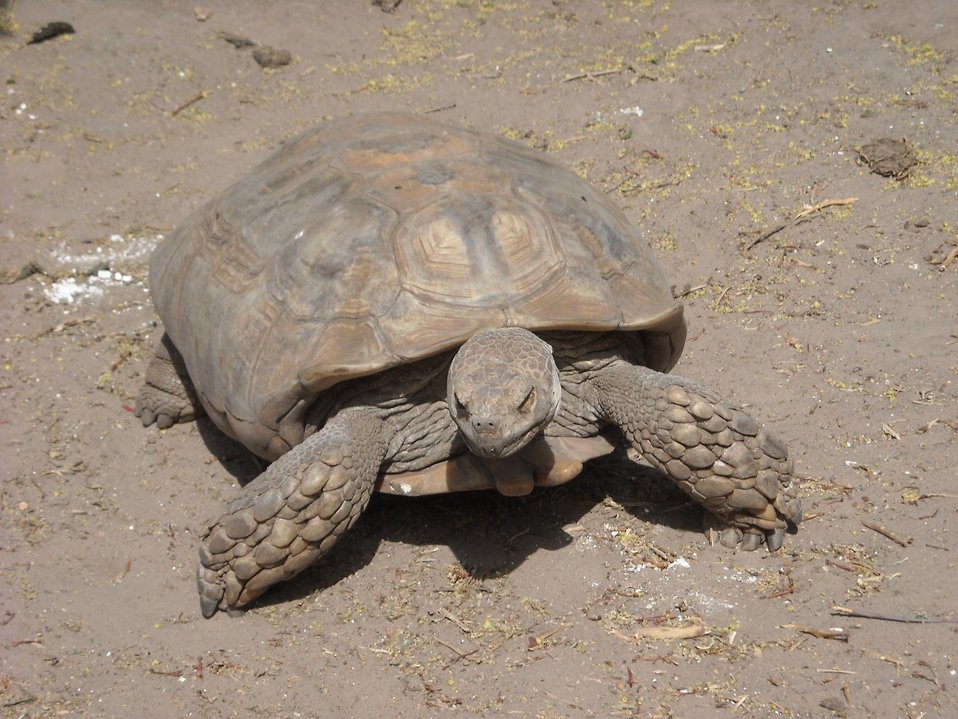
A sulcata tortoise (Geochelone sulcata) , a land-dwelling reptile native to Northern Africa. Ridges less pronounced than in images anim2015 and anim2016.